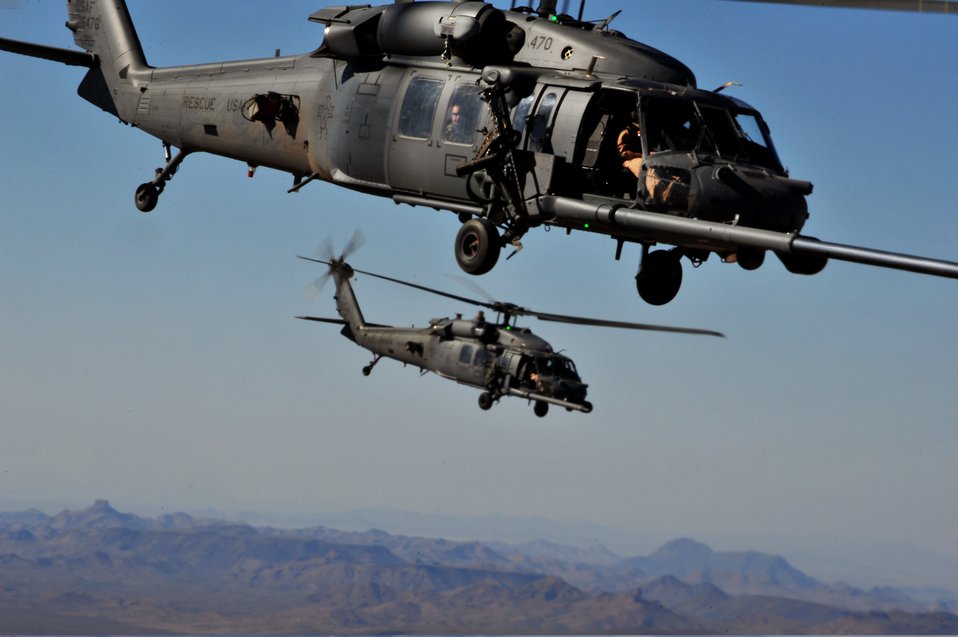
Ready to refuel

Two HH-60 Pave Hawks maneuver behind an HC-130 King to perform a helicopter air refueling Oct. 16, 2011, at Davis-Monthan Air Force Base, Ariz., during Angel Thunder 2011. Angel Thunder is an Air Combat Command sponsored personnel recovery/combat search and rescue exercise that combines Department of Defense and non-DoD assets.